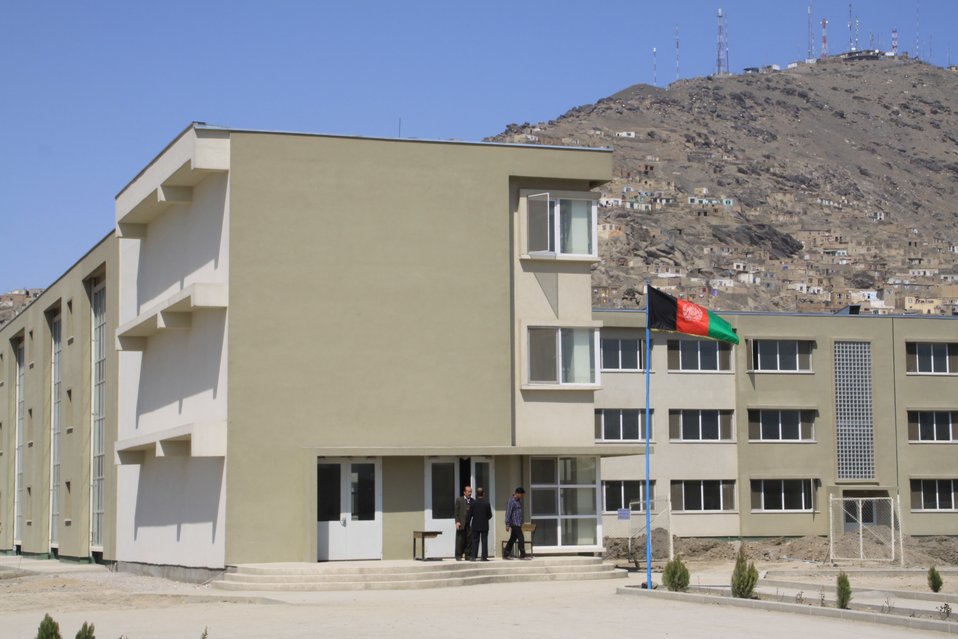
Ghazi high school , Kabul

5400 students will be able to study in this school